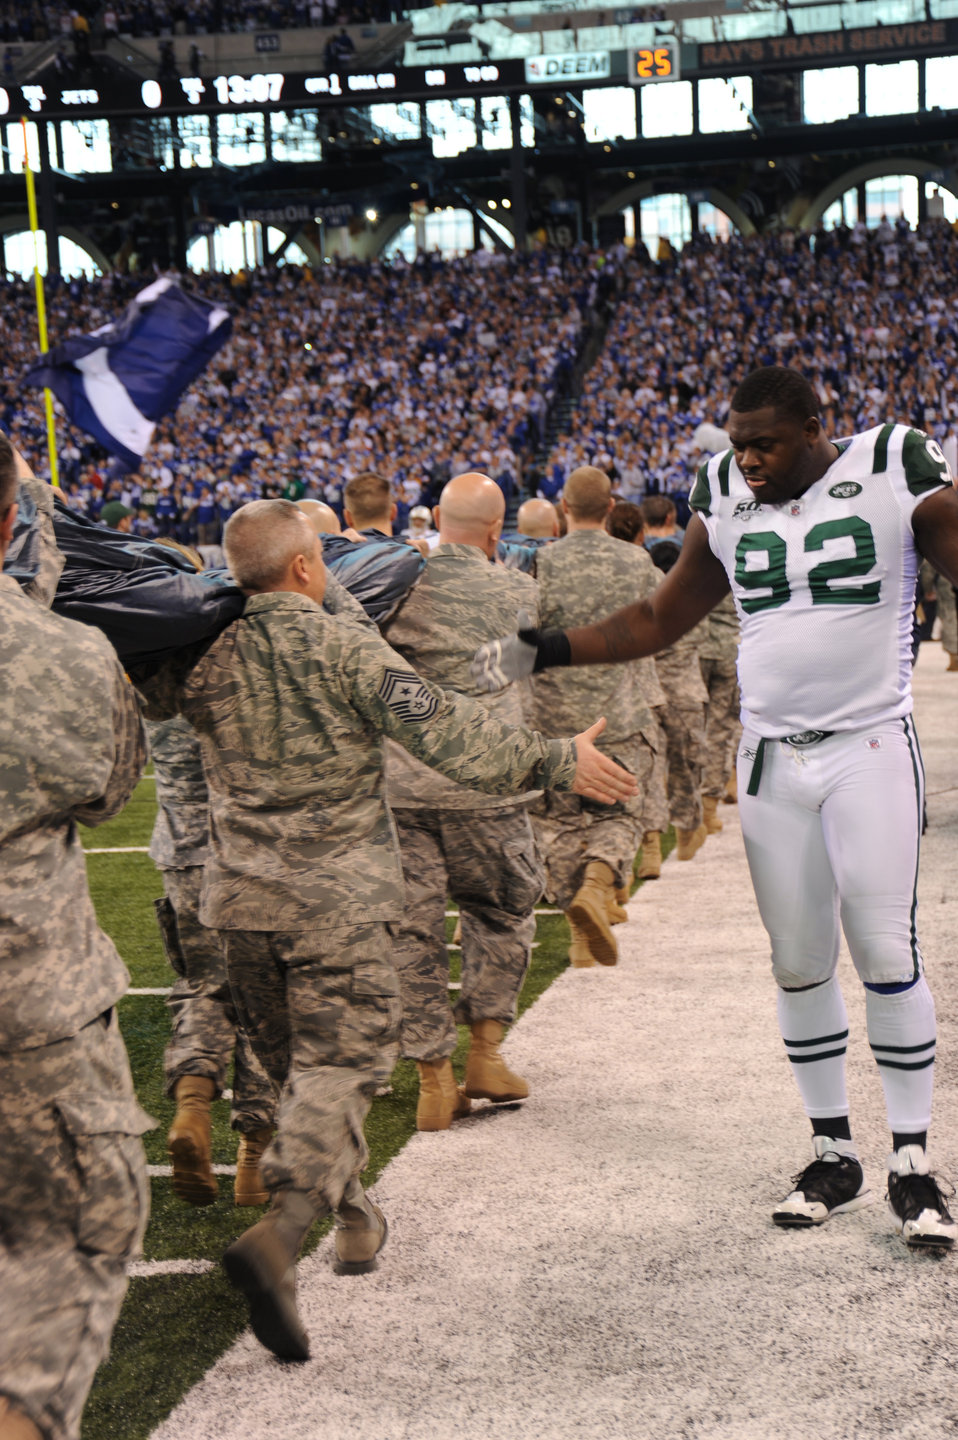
Airmen honor the colors before NFL's AFC Championship Game

Shaun Ellis, a New York Jets Pro-Bowl defensive end, high fives servicemembers from the Indiana National Guard after the national anthem of the NFL's American Football Conference Championship Game between the New York Jets and the Indianapolis Colts in Indianapolis, Ind. The Colts won the game 30-17 and will face the New Orleans Saints in the Super Bowl in Miami on Feb. 7, 2010.